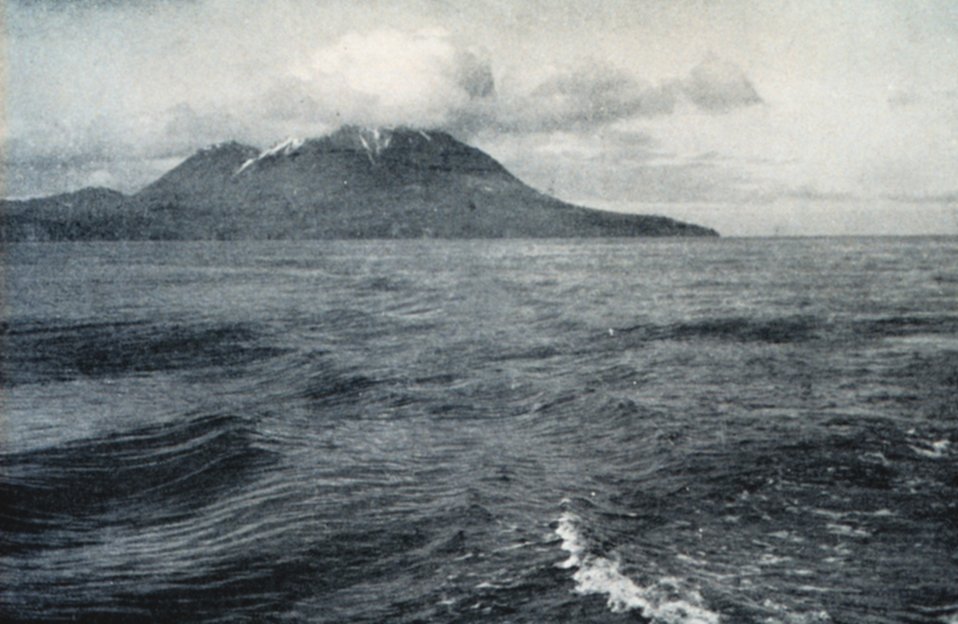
Kagamil Island from the south.